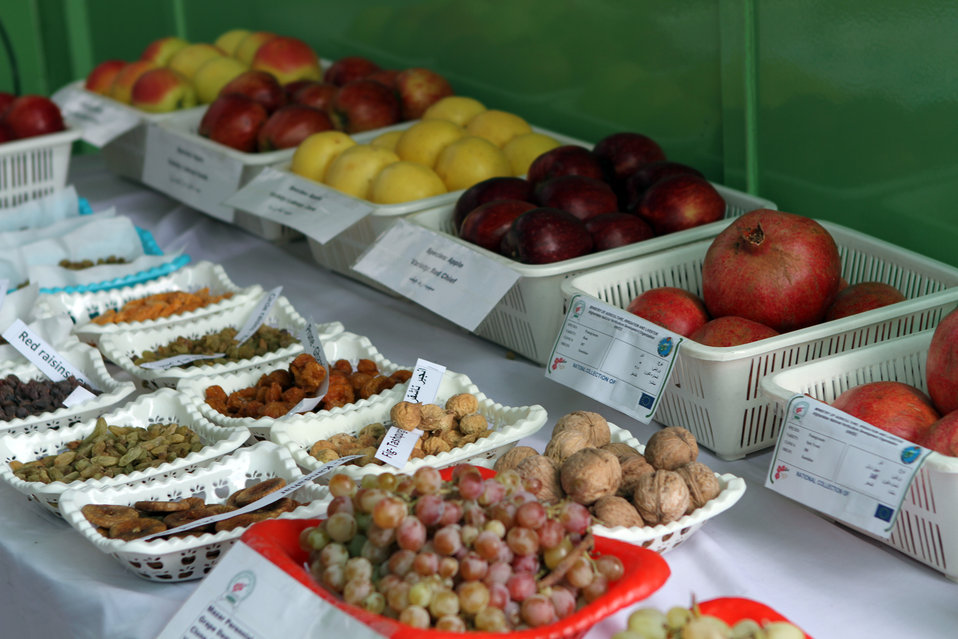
Agfair event